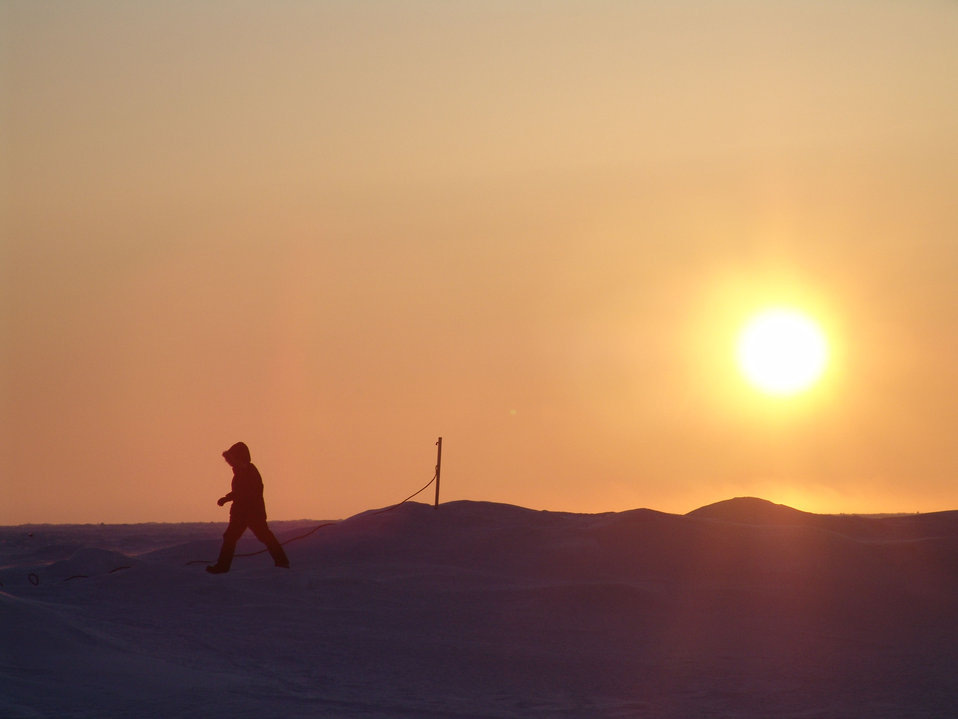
Scientist silhouetted against an orange sky.